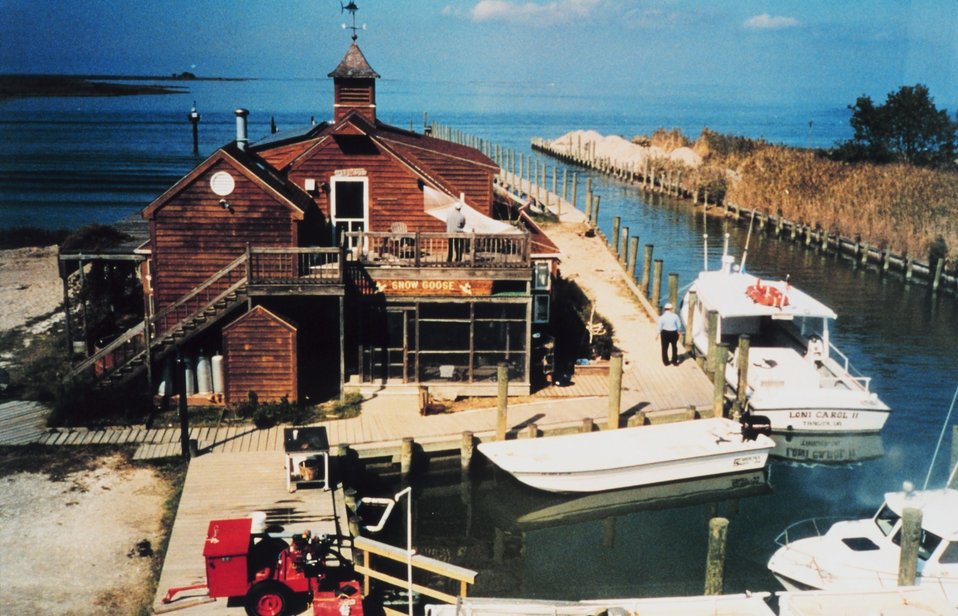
The harbor at Port Isobel.